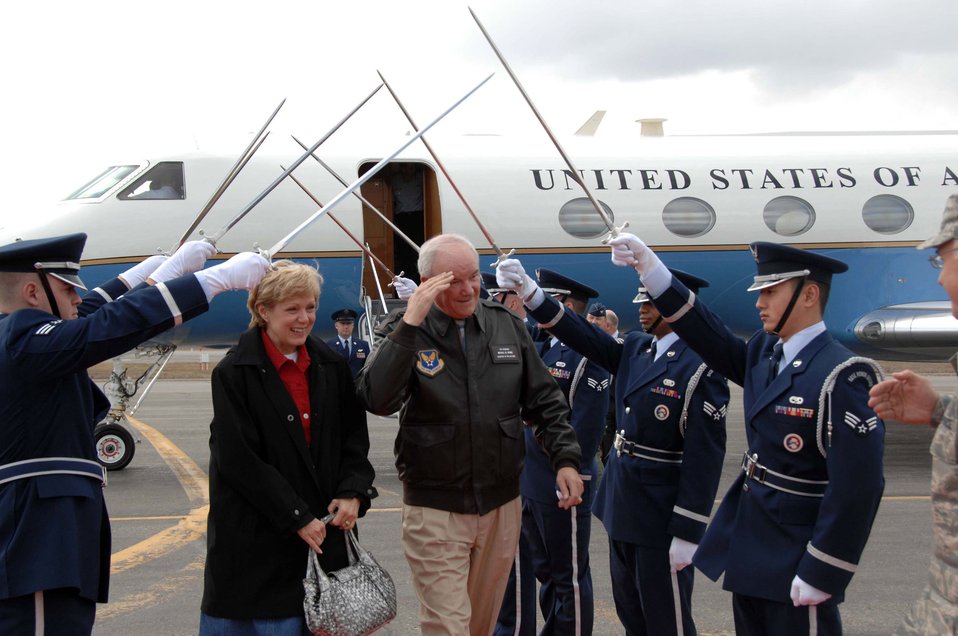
SECAF sees bright future for Eielson Airmen

Secretary of the Air Force Michael W. Wynne and his wife Barbara are greeted by the the 354th Fighter Wing Honor Guard at Eielson Air Force Base, Alaska. The 21st secretary of the Air Force toured the Pacific Region to introduce his top priorities for the Air Force -- winning the war on terrorism, fostering mutual integrity and respect, and revitalizing the service's aging infrastructure and fleet.